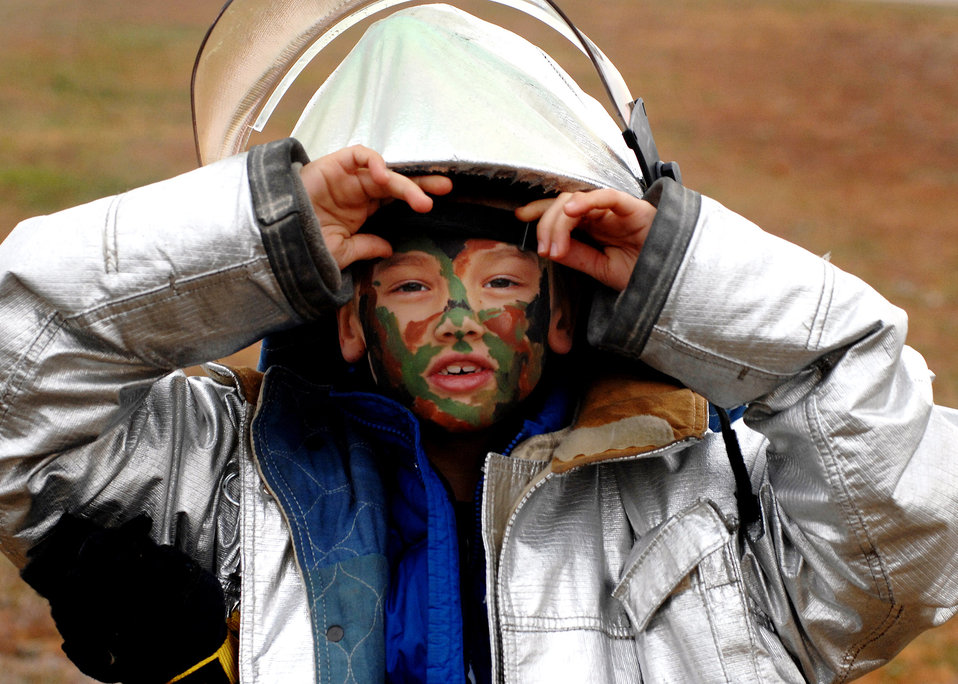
Warrior for a day

Second grader Matthew Kochman patiently waits in line for an attack hose demonstration hosted by the base fire department during a children's deployment day Oct. 24 at Aviano Air Base, Italy. Matthew is the son of Master Sgt. Keith Kochman and Jessica Kochman. More than 200 children participated in the day-long event.